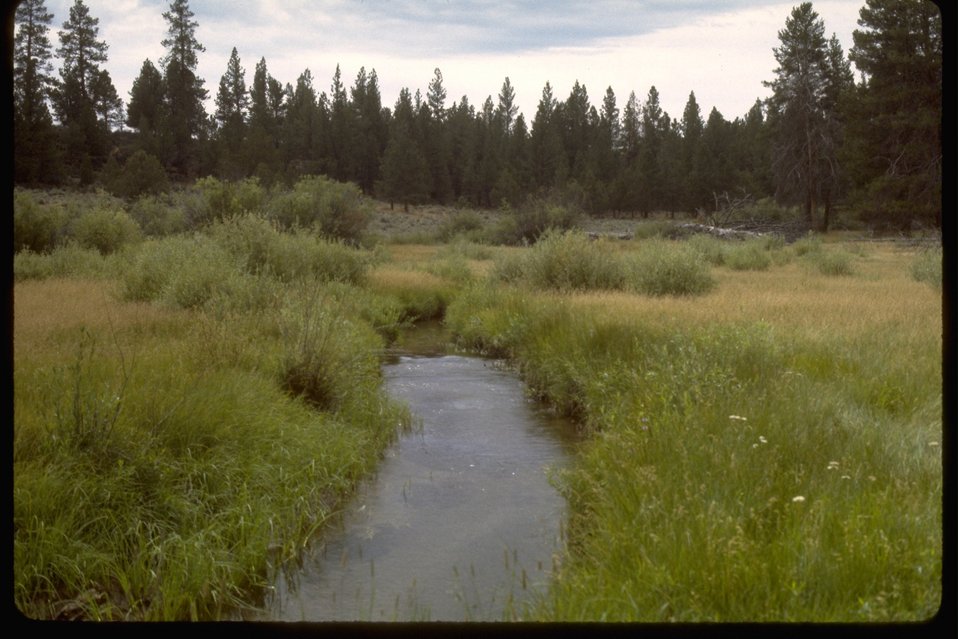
Riparian area at Bridge Creek.